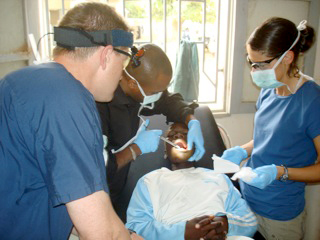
Hurlburt dental team

Captain Tad Tholstrom (far left) and Staff Sgt. Leah Potter (far right) operate alongside a local dentist while treating a patient in west Africa. The Airmen were temporarily assigned to the west Africa region in support of Exercise Flintlock, an annual exercise that focuses on improving interoperability between the militaries of the United States, Europe and northern and western African countries. Captain Tholstrom is a 1st Special Operations Medical Group dentist. Sergeant Potter is a 1st Special Operations Medical Group dental technician.